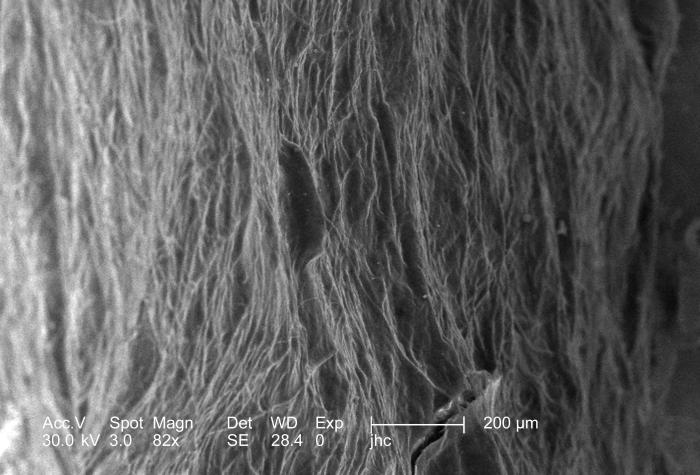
At a relatively low magnification of 82x this scanning electron micrograph (SEM) depicted some of the ultrastructural details made visible of the surface of an unidentified wasps' nest found on the ground in the Decatur, Georgia suburbs. Note that the nest material takes on the appearance of woven fibers. In this particular view, there is less of the glue-like matrix visible, with the preponderance of nest material being the cellulose strands, which will become embedded in a matrix, very similar to the way in which rebar, i.e., iron textured rods, is embedding in concrete to reinforce the building material.